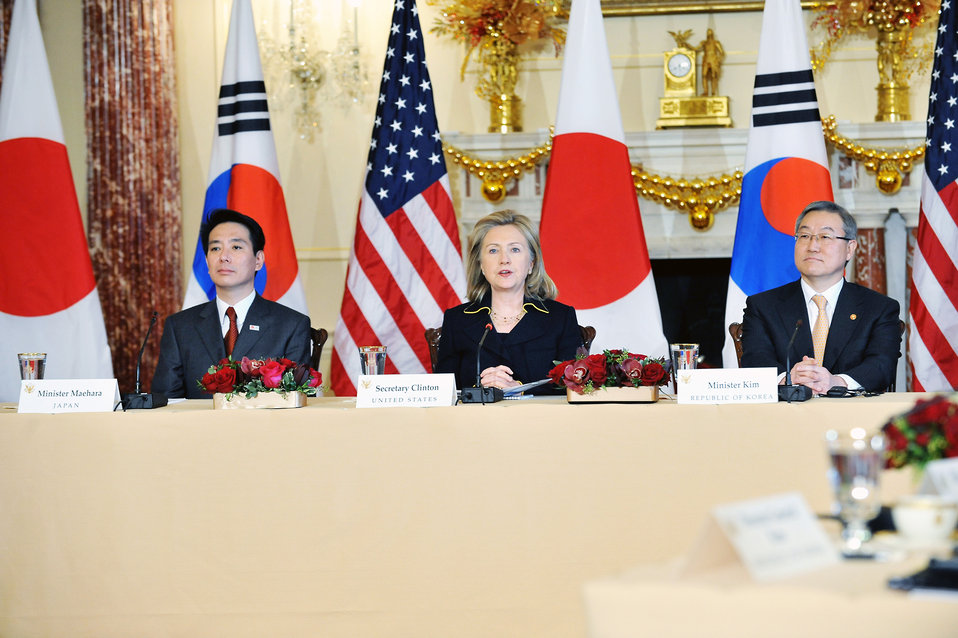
Secretary Clinton Holds a Trilateral Meeting With Japanese Foreign Affairs Minister Seiji Maehara and Republic of Korea Foreign Affairs and Trade Minister Kim Sung-Hwan

U.S. Secretary of State Hillary Rodham Clinton holds a trilateral meeting with Japanese Foreign Affairs Minister Seiji Maehara and Republic of Korea Foreign Affairs and Trade Minister Kim Sung-Hwan at the U.S. Department of State in Washington, D.C., on December 6, 2010.